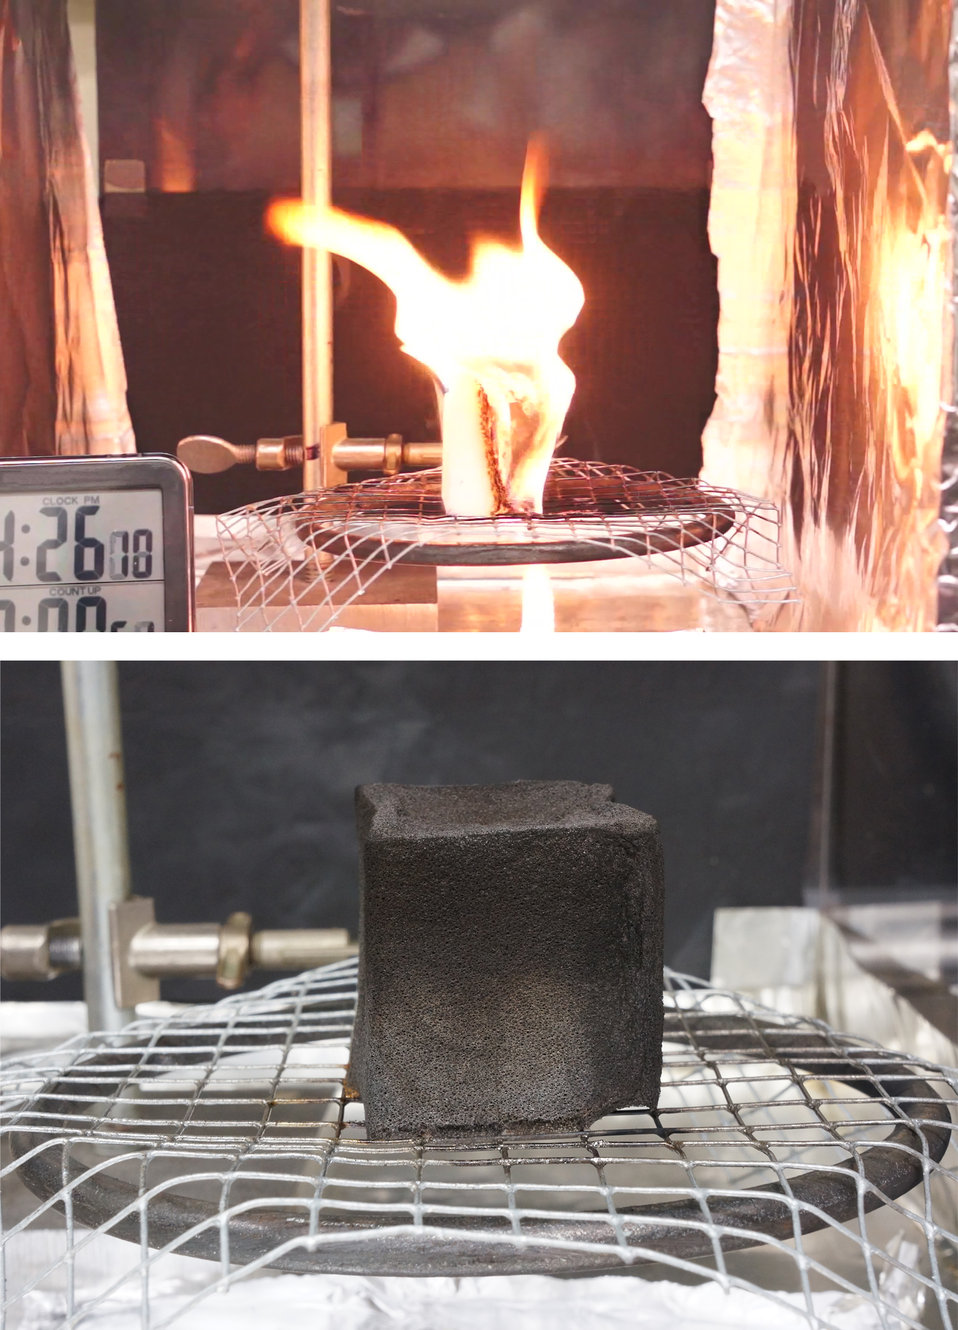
Flammability Testing

Using a testing device called a cone calorimeter, NIST researchers measure the heat-release rate and other flammability properties of materials. Above, untreated polyurethane foam 'catches fire' from a nearby heat source. Below, foam treated with a novel clay-filled coating did not ignite when exposed to the same heat source. Instead, a fast-growing protective layer-called char-forms on the surface.